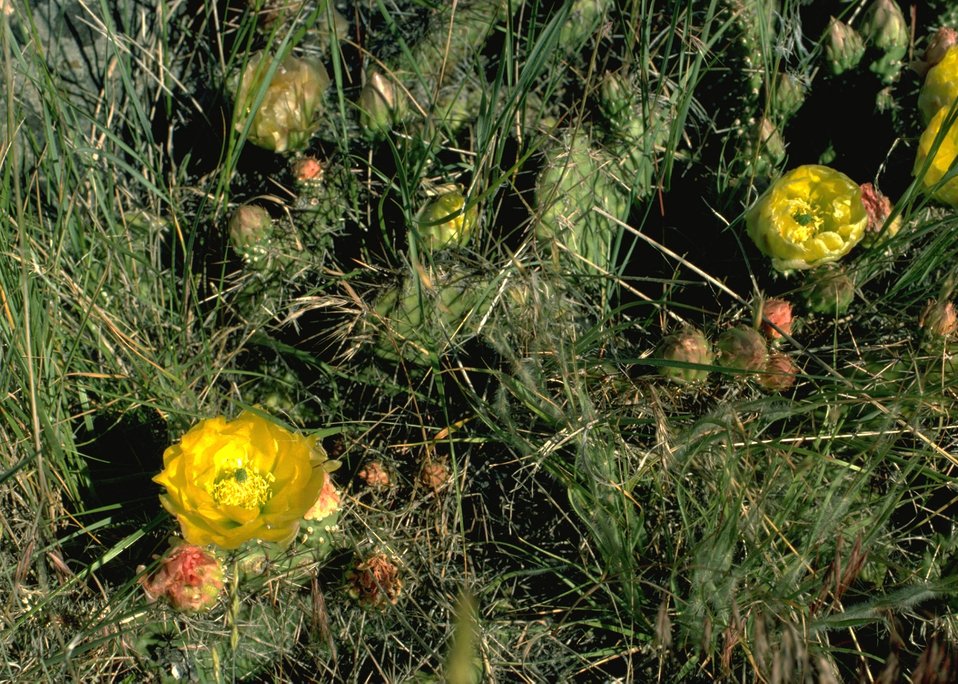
Prickley pear cactus flower.